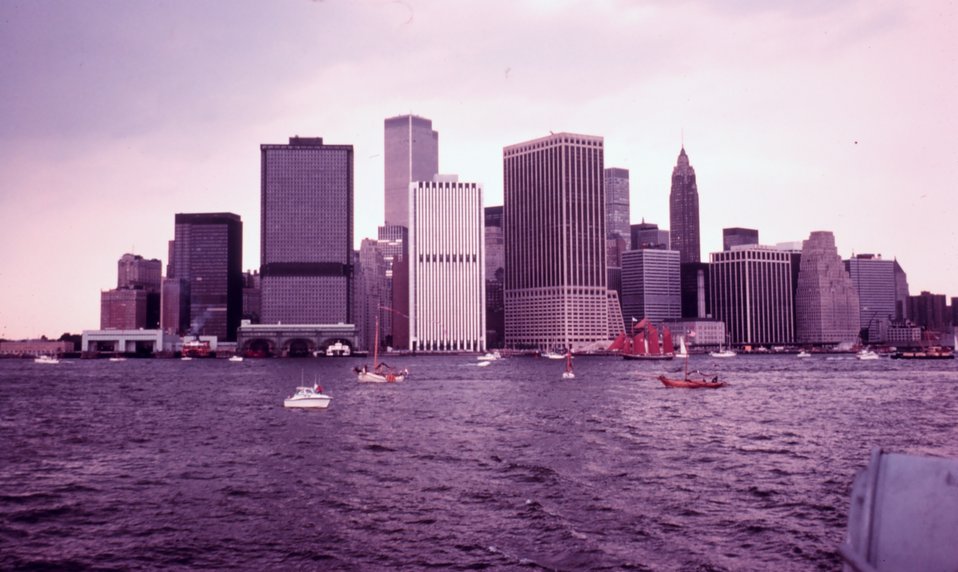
Manhattan skyline